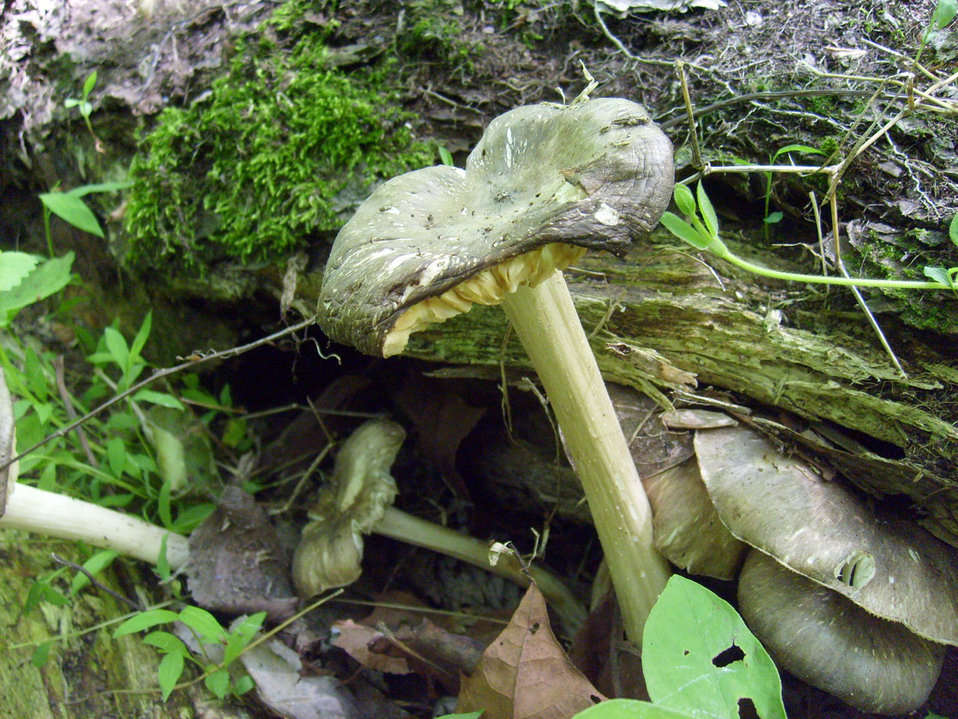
Toad stools in the woods.